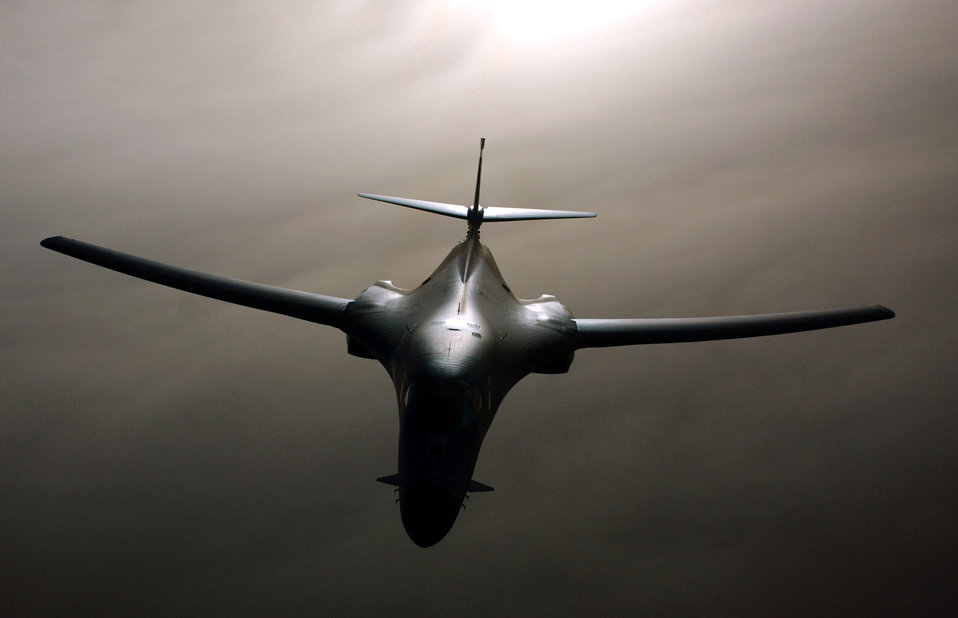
Lancer mission

OPERATION IRAQI FREEDOM -- A B-1 Lancer continues its mission after refueling in the skies near Iraq on March 25. The B-1 crew, assigned to 405th Air Expeditionary Wing, is flying missions from a forward-deployed air base as part of Operation Iraqi Freedom.